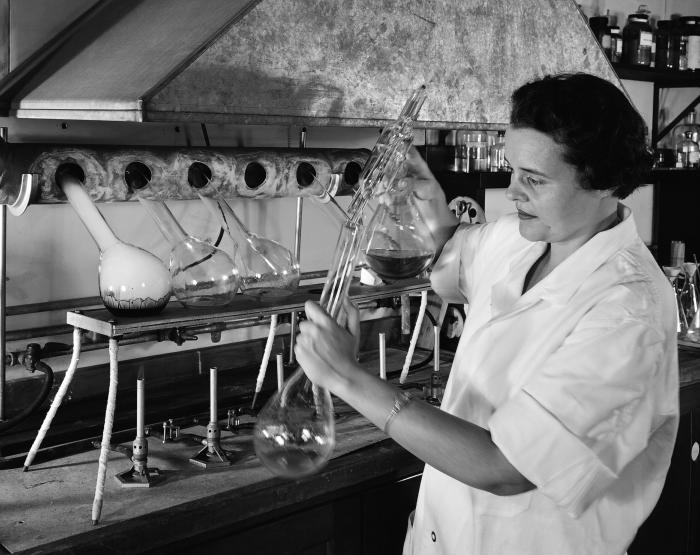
This historic image depicted laboratorian, Ms. Janet Spillane, as she was carrying out a determination of the total nitrogen contained in a sample of compost refuse.